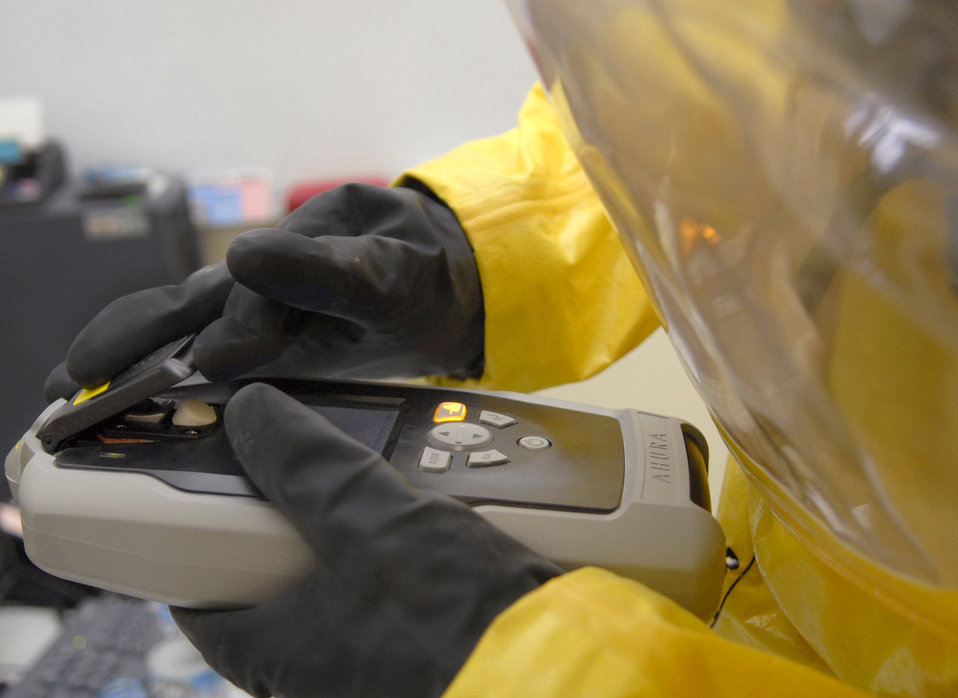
Who you gonna call?

Staff Sgt. Trevor Fettig prepares to analyze a liquid sample for contamination during a unit exercise March 27 at an air base in Southwest Asia. Sergeant Fettig, a readiness and emergency management journeymen with the 379th Expeditionary Civil Engineer Squadron, hails from Lompoc, Calif., and is deployed from Travis Air Force Base, Calif.